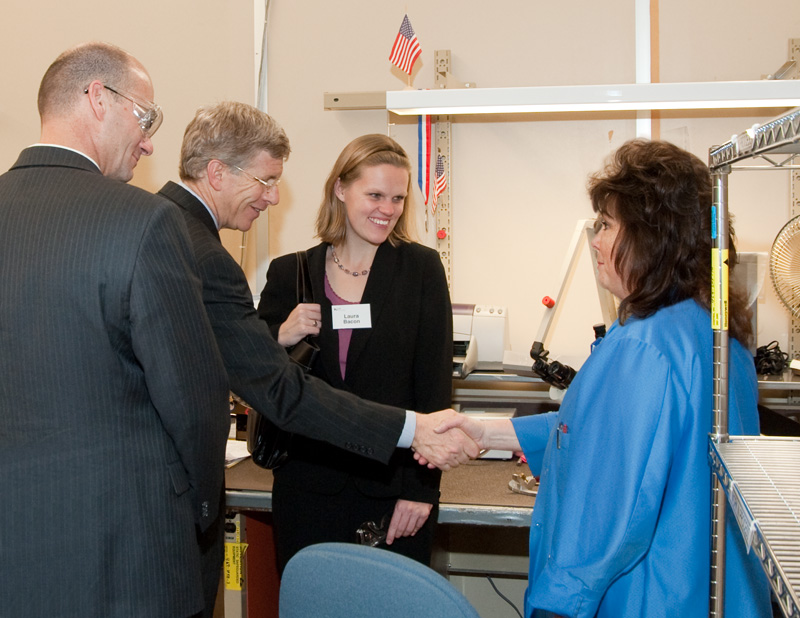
Deputy Secretary Daniel Poneman meets KCP employees.